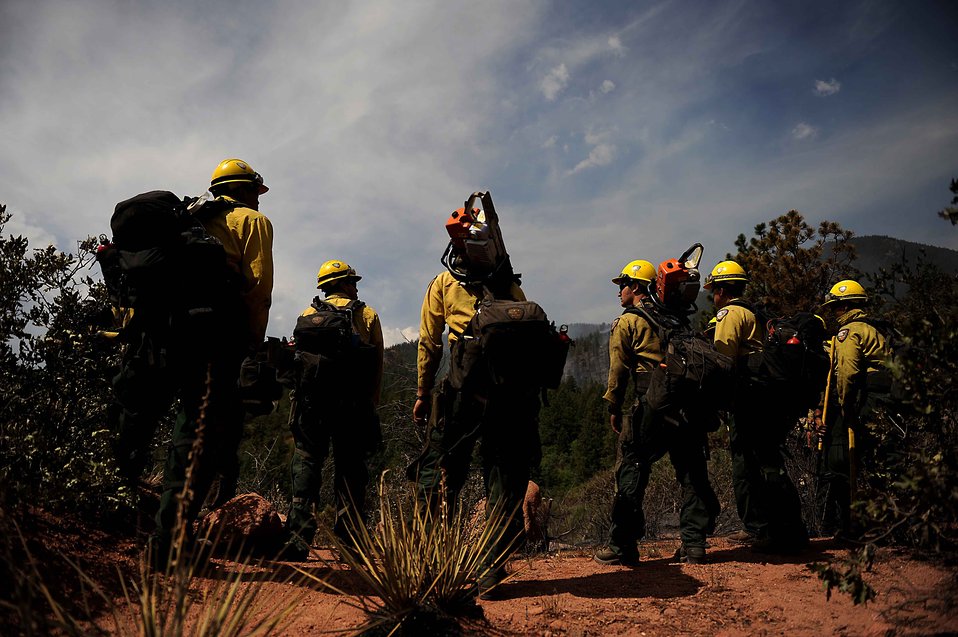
Hot shots

Vandenberg Air Force Base Hot Shot firefighters prepare to cut a fire line in the Mount Saint Francois area of Colorado Springs, Colo., while helping to battle several fires in Waldo Canyon on June 28, 2012. The Waldo Canyon fire has grown to 18,500 acres and burned more than 300 homes.